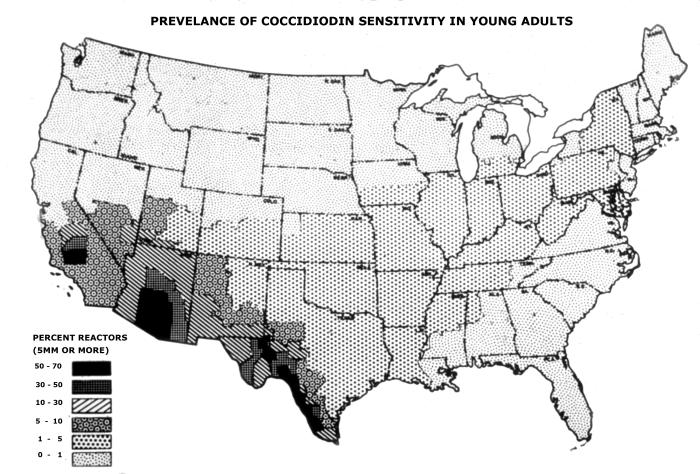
Map of United States showing geographic variation in the prevalence of coccidioidin sensitivity in young adults